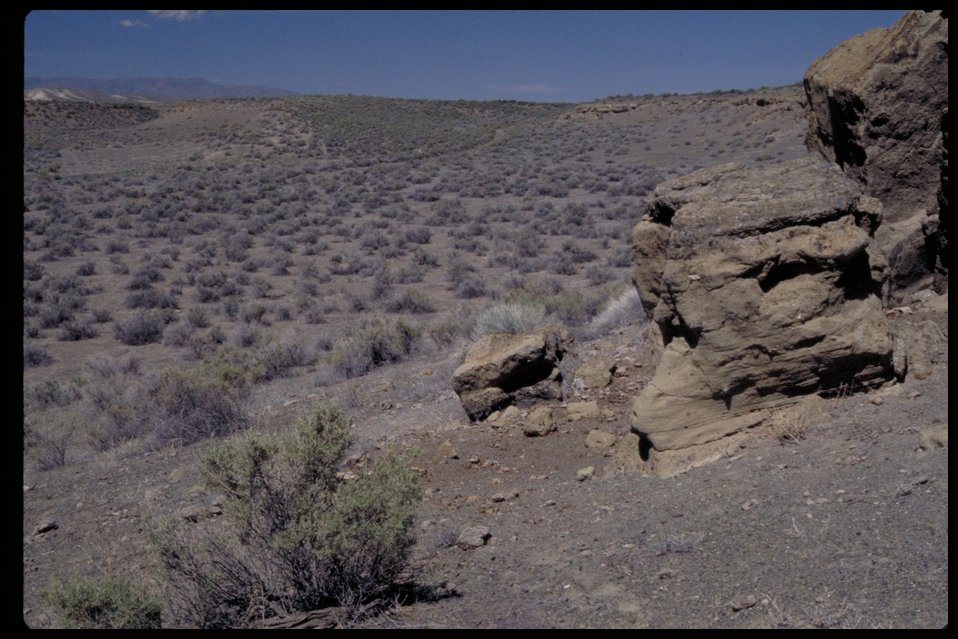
Oregon Trail near Wildhorse Butte Lower Snake River District